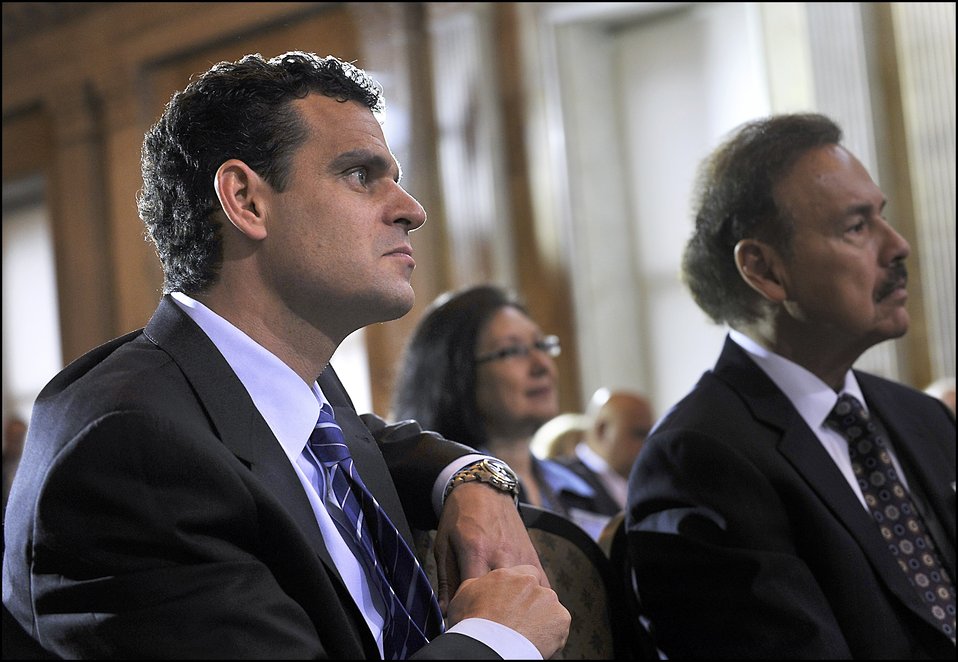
Ten Years Later: Progress and Challenges in Combating Terrorist Financing Since 9/11, 09/08/11

Under Secretary for Terrorism and Financial Intelligence David S. Cohen looks on as Secretary Geithner delivers opening remarks.